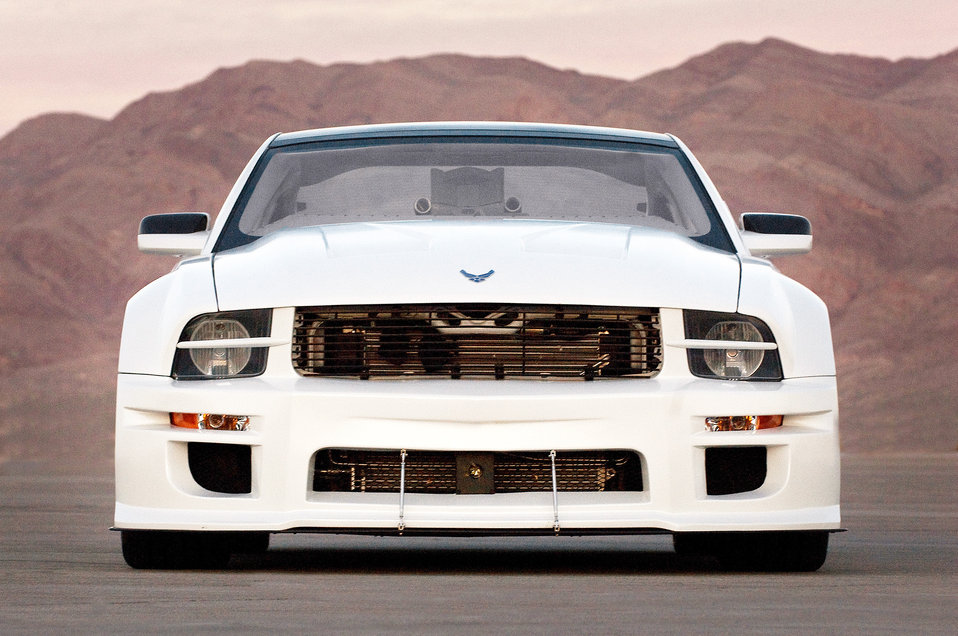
Super Car Tour

The ?X-1? Mustang is matte-pearlescent painted with a jet cockpit that includes a single-driver ejection seat in the center of the vehicle, short shifter, flight stick and advanced instrumentation panel. The X-1 also has a concealed motorized steering wheel, custom foot pedals, GPS transponder and the innovative dash is equipped with a touch screen monitor and sensor pack that displays night and thermal vision. The 4.6 liter engine includes 3-valve Ford Racing heads, cold air intake, hot rod cams, and long tube headers creating 500hp and is maintained by a custom Ford Racing Tuning Program. The X-1 is one of the Air Force's newest mobile marketing assets and will be touring high schools and a variety of Air Force sponsored events as part of the 2009 Super Car Tour.